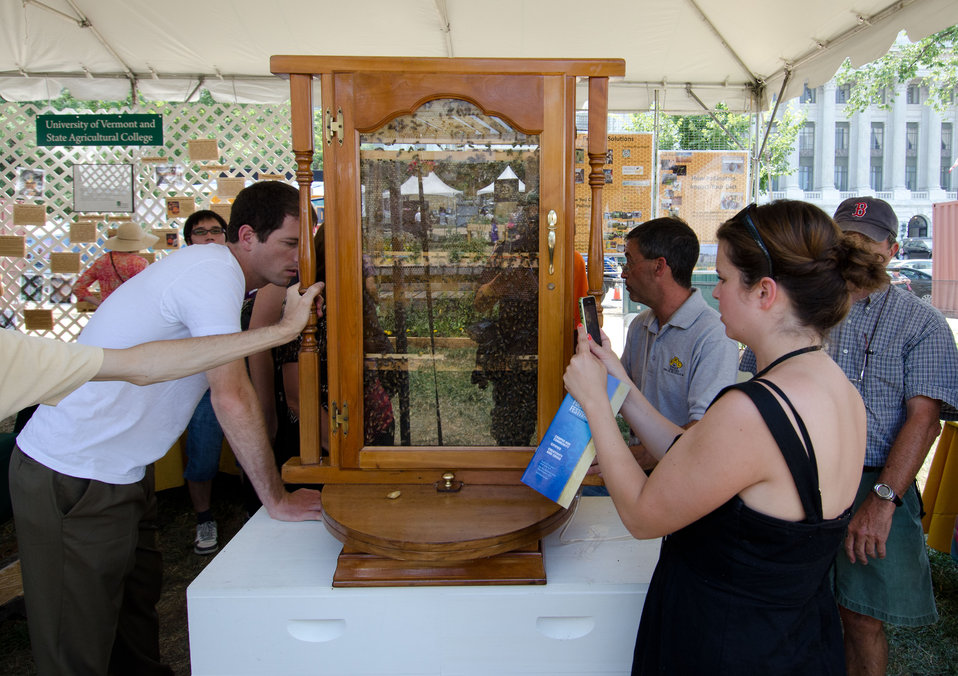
The U.S. Department of Agriculture (USDA) Bee Research Laboratory displays a live bee colony in a two-sided glass case at 2012 Smithsonian Folklife Festival, on Thursday, June 28, 2012 on the National Mall in Washington, D.C. One of the three themes this year is “Campus and Community.” It celebrates the 150 years of the USDA and the Land-Grant University System. The USDA and the Land-Grant system extend education across the country, contributing to American agriculture success and rural prosperity. “Campus and Community” has demonstrations, discussions, hands-on activities, and entertainment to that showcase the many ways that this partnership works to improve American agriculture and rural life.